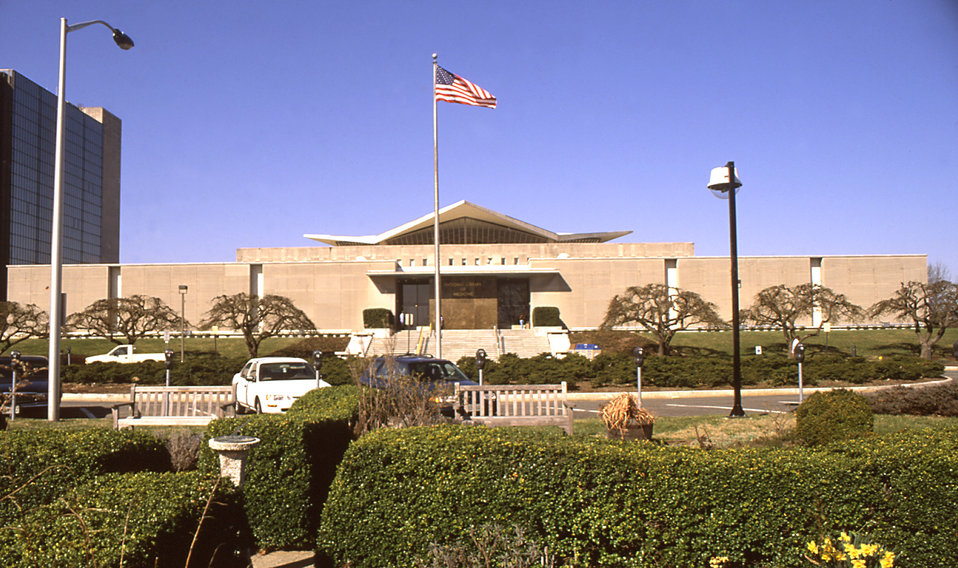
This 1999 photograph depicted the National Library of Medicine (NLM), located on the campus of the National Institutes of Health in Bethesda, Maryland. It is the world's largest medical library, collecting materials, and providing information and research services in all areas of biomedicine and health care.The NLM's MedlinePlus� online database, can help consumers find information on health topics of all kinds, including diseases, wellness, hospitals, physicians, and pharmaceuticals. NLM also coordinates the National Network of Libraries of Medicine, which provides health care professionals and the public equal access to biomedical and health care information resources.